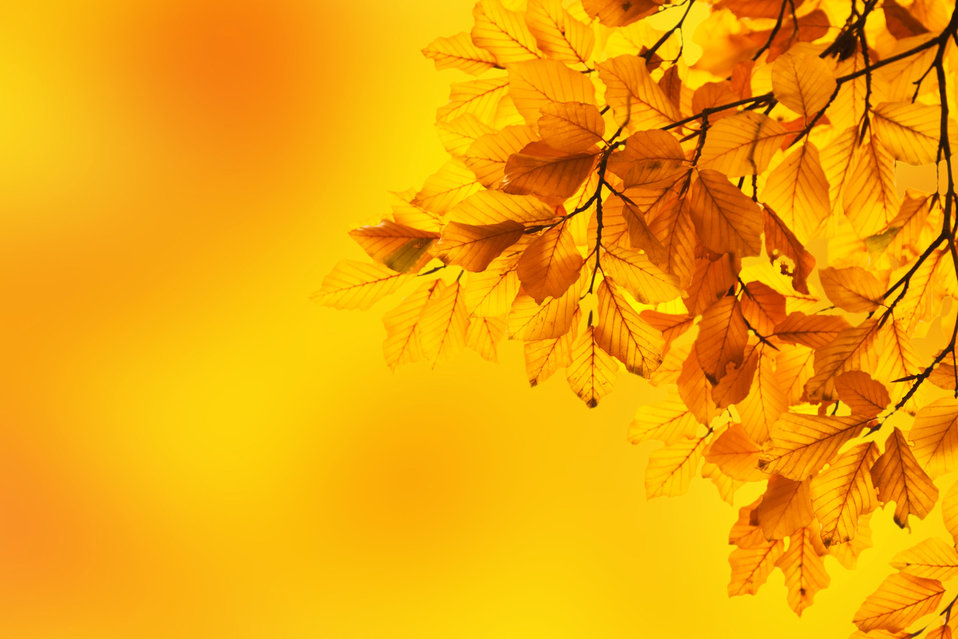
Yellow beech leaves on blurred yellow background.